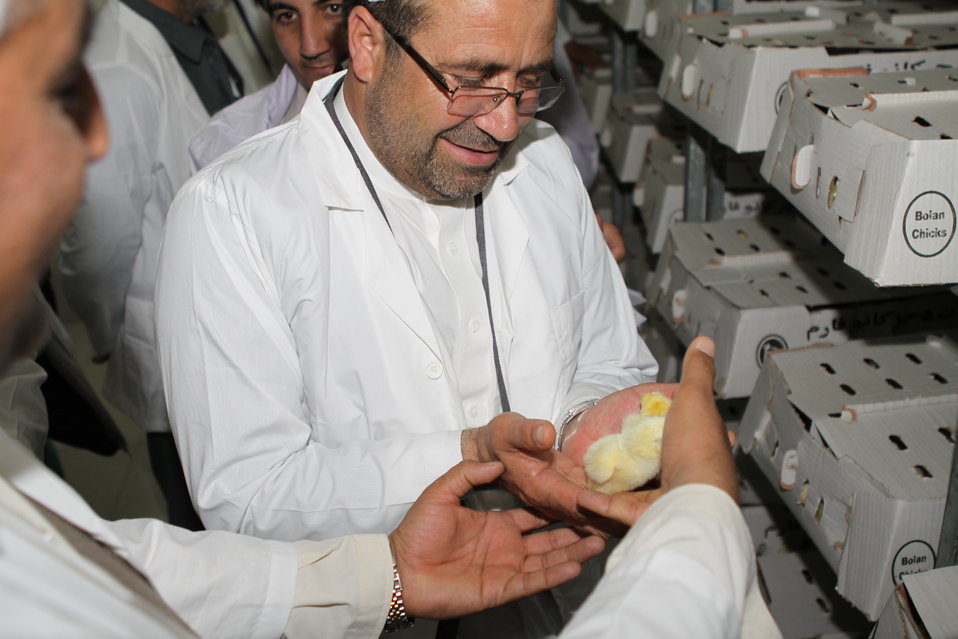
Bolan Poultry Farm